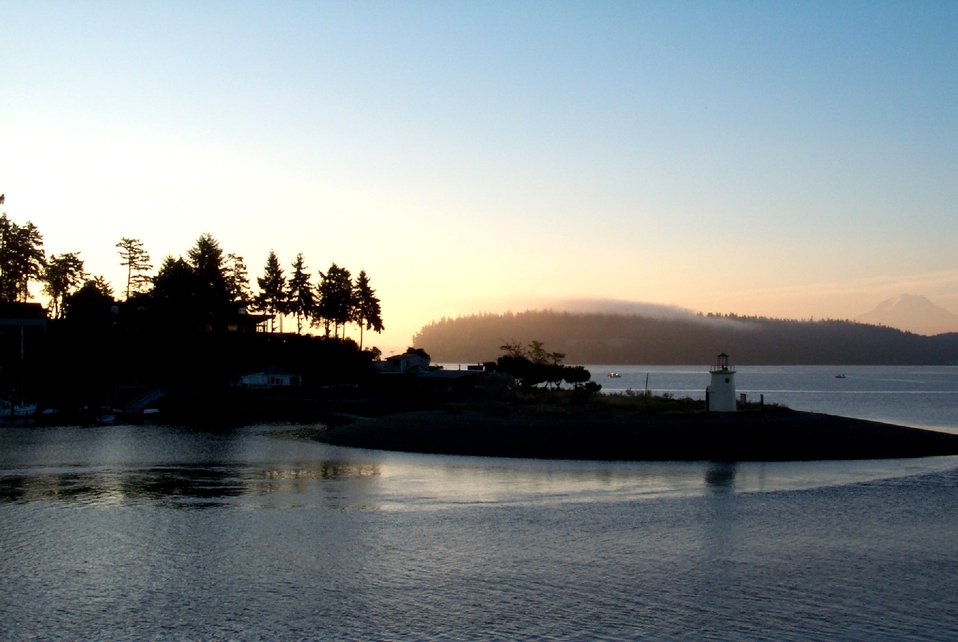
A mid-summer sunrise at Gig Harbor. The sun is rising to the left of Point Defiance. Mt. Rainier can be seen to the right.